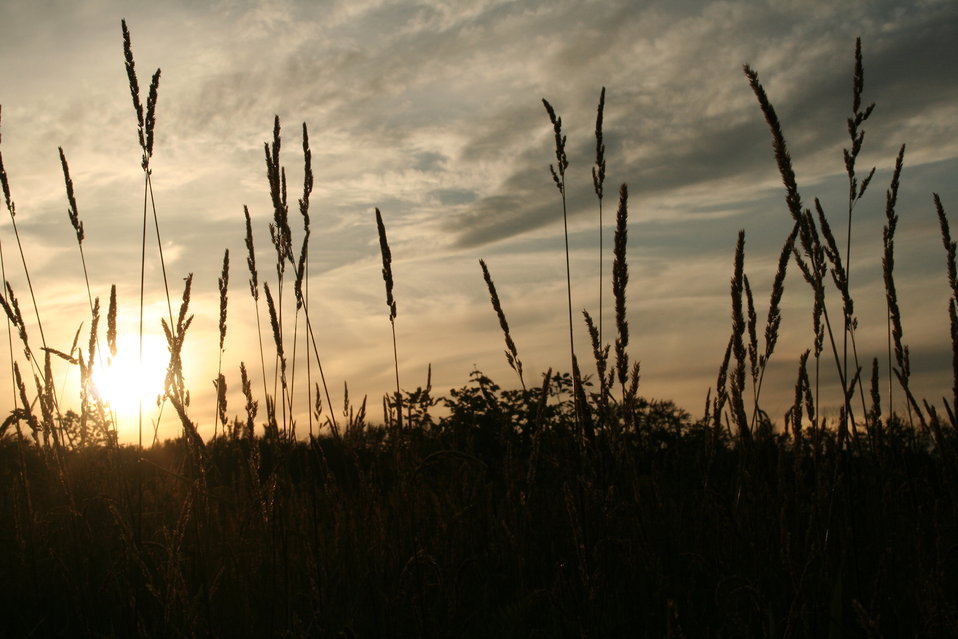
Sunset at bat research site